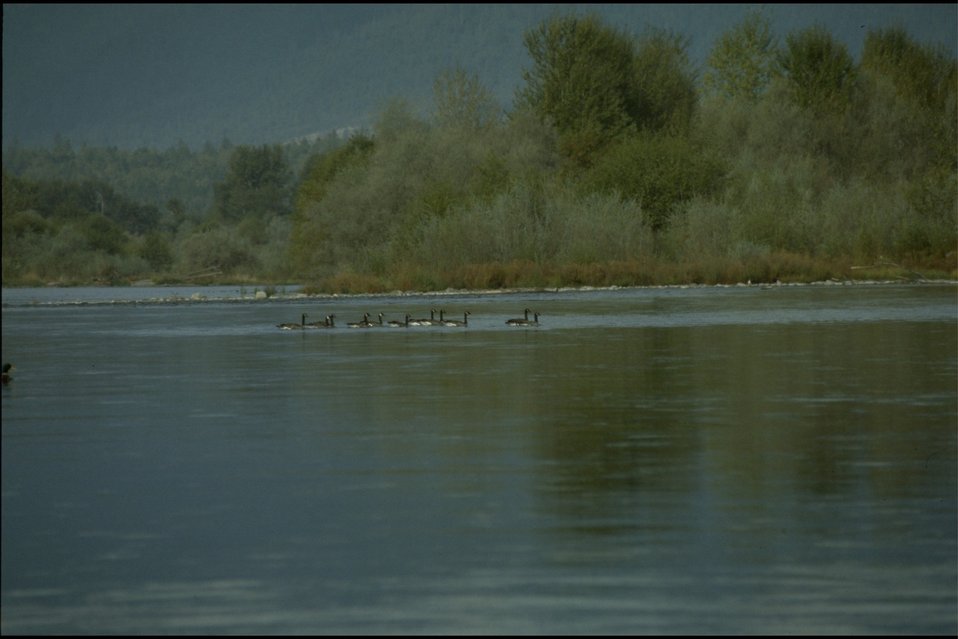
Rogue River, Hellgate Recreation Area; Canadian Geese.